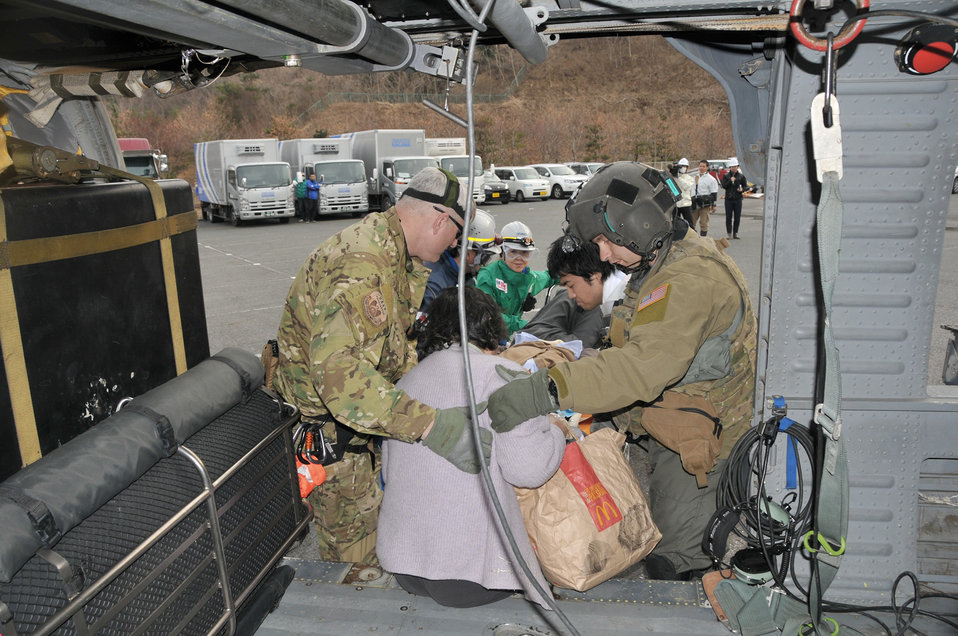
Search and rescue

An Air Force search and rescue Airman (right) assists a Japanese disaster medical assistance team to off-load an earthquake victim from an HH-60G Pave Hawk helicopter March 14, 2011, at Sendai, Japan.